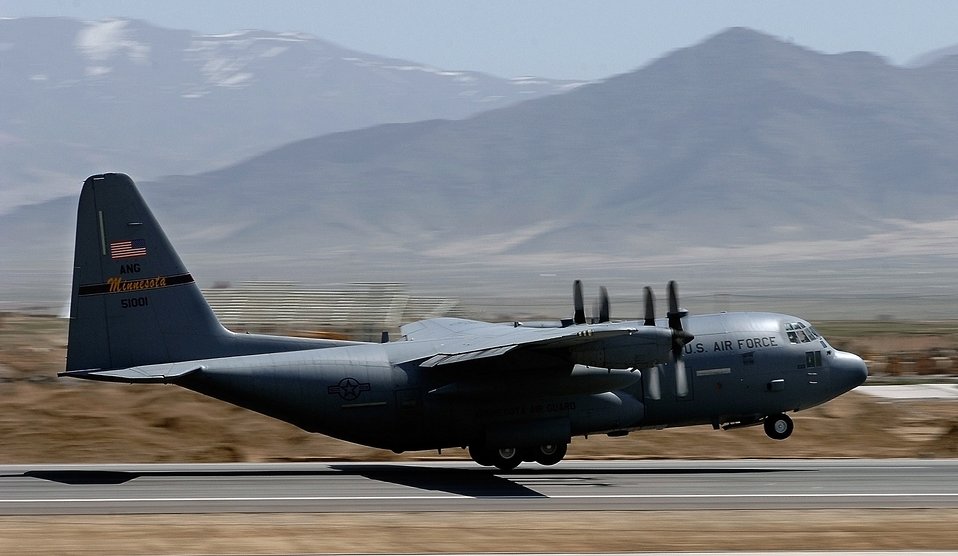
Airpower Summary for 12 July, 2007

A C-130 Hercules takes off from Bagram Air Base, Afghanistan, in support of Operation Enduring Freedom. C-130s provide intra-theater airlift support for operations throughout the region.